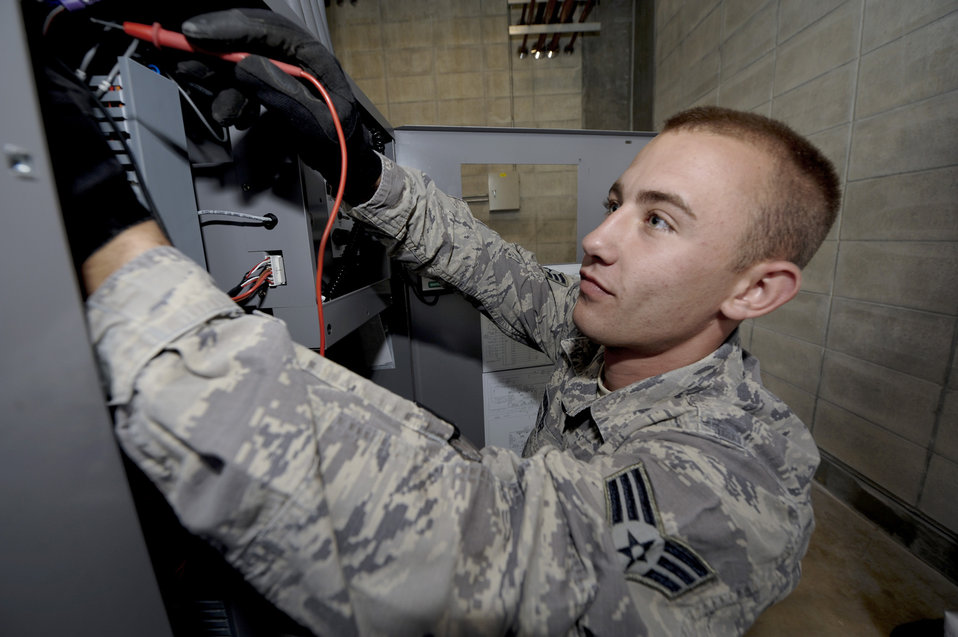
AFSO 21 saves Kadena millions in parts, energy bills

Senior Airman Derek Hunter checks electrical circuits on a heating ventilation and cooling system April 21, 2011, at Kadena Air Base, Japan. Base officials recently instituted an initiative through the Air Force Smart Operations for the 21st Century program to replace old, outdoor AC chillers with protected, indoor equipment to save the Air Force potentially millions of dollars in parts and energy. Airman Hunter is assigned an heating, ventilation, air conditioning and refrigeration technician assigned to the to the 18th Civil Engineer Squadron.